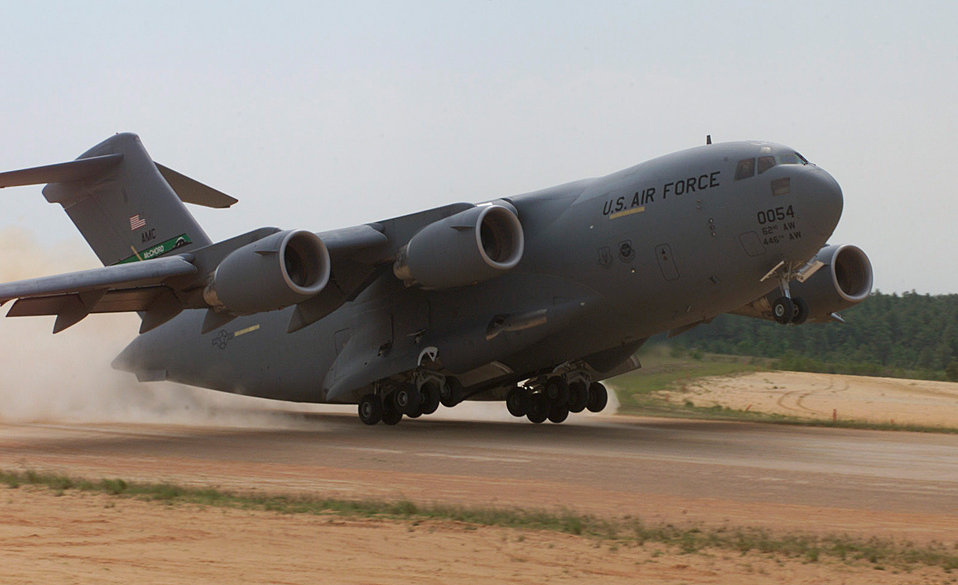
C-17 Globemaster

FORT BRAGG, N.C. -- A C-17 Globemaster III, 446th Airlift Wing, McChord Air Force Bse, Wash., conducts an assault landing at Holland landing zone here, May 9, 2000. During Rodeo 2000, teams from all over the world will compete in areas including airdrop, aerial refueling, aircraft navigation, special tactics, short field landings, cargo loading, engine running on/offloads, aeromedical evacuations and security forces operations.